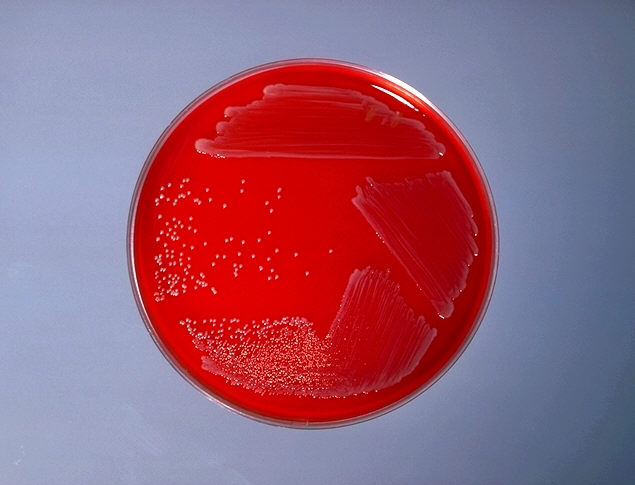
Blood agar plate culture of Corynebacterium diphtheriae mitis.